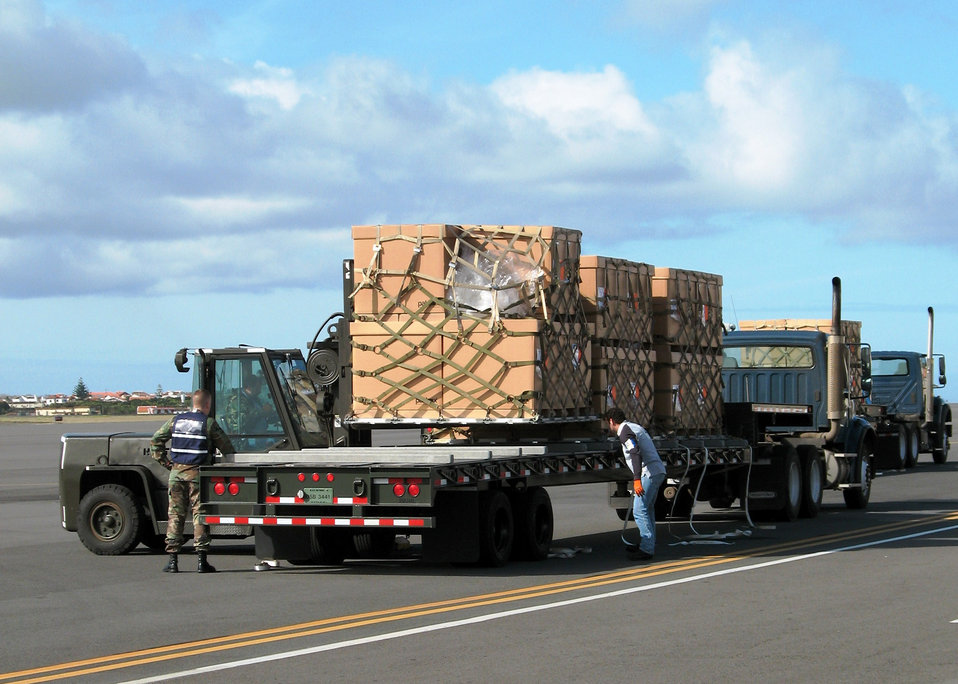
Air transportation specialists key to life at Lajes

Air transportation specialists tie down a load to a truck headed to the base commissary Feb. 7 at Lajes Field, Azores. These pallets traveled from Germany on a 747 to Lajes Field carrying goods for the commissary and base exchange.